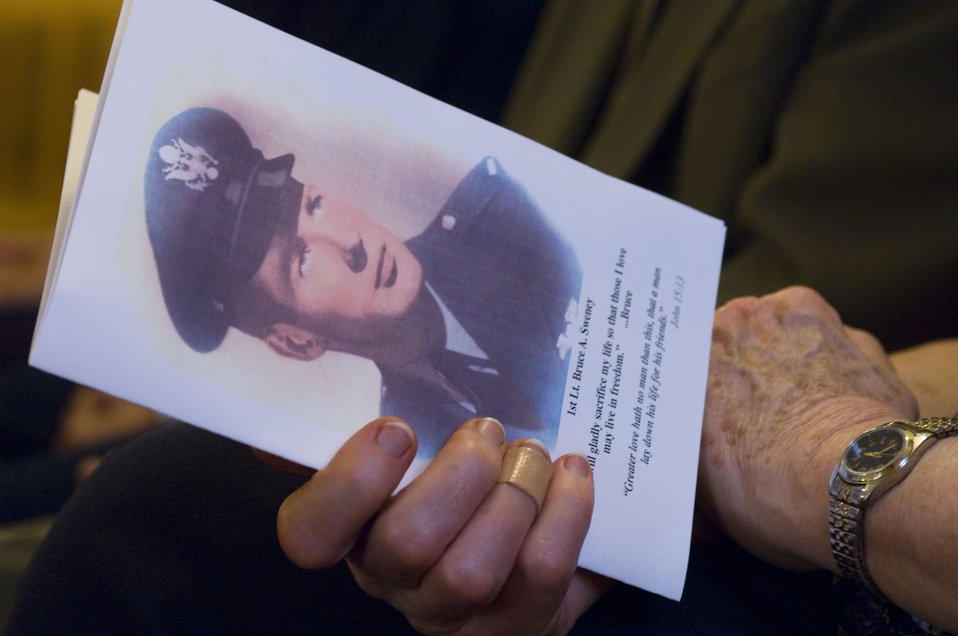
Siblings honor brother's sacrifice

Memorial services for 1st Lt. Bruce Sweney were held Oct. 1 near Avon, Ill. As an Air Force pilot, Lieutenant Sweney was shot down over North Korea in 1951. He is one of 389 still listed as missing in action from the Korean War.